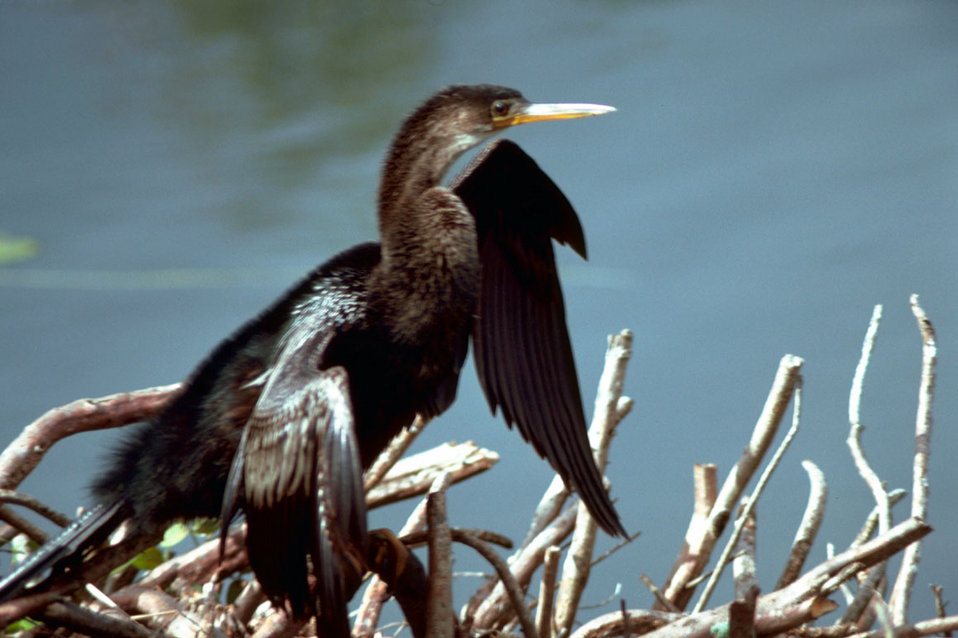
Anhinga.